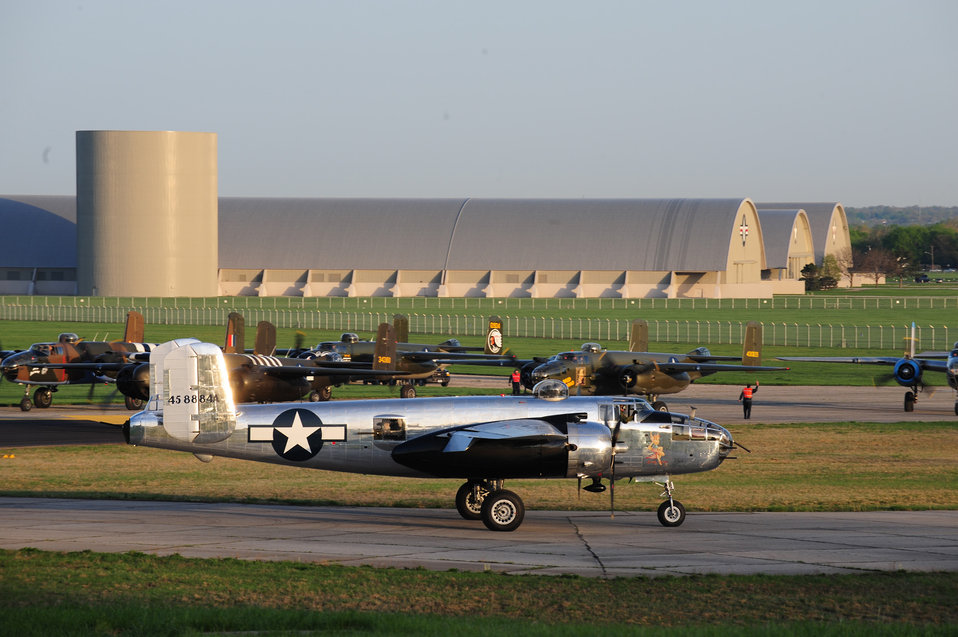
68th Doolittle Raiders Reunion

Vintage B-25 Mitchell aircraft arrive at the National Museum of the U.S. Air Force at Wright Patterson Air Force Base, Ohio, to take part in events honoring the 68th Doolittle Raiders' reunion, April 17, 2010. The event commemorates the anniversary of the Doolittle Tokyo Raid when on April 18, 1942, U.S. Army Air Forces Lt. Col. Jimmy Doolittle's squad of 16 B-25s bombed targets in response to the Japanese attack on Pearl Harbor.